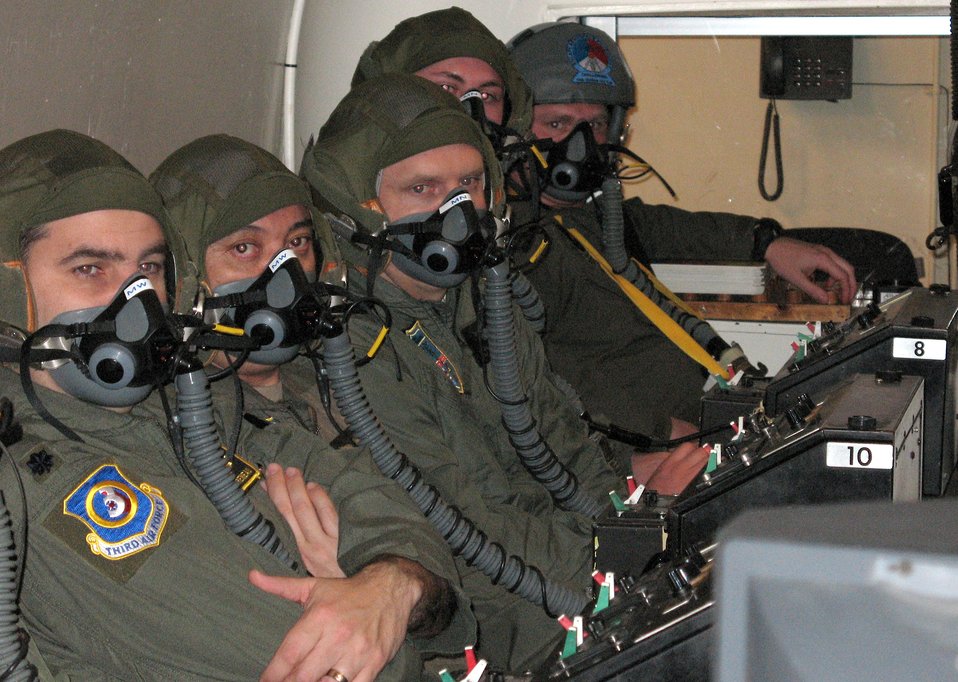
Teaching high-altitude safety at 50 feet below sea level

Students look on during a pre-flight brief in the high-altitude training chamber Feb. 7 at the Center for Man and Aviation in the Netherlands. The chamber simulates altitudes up to 30,000 feet and allows students to see firsthand the effects of hypoxia.